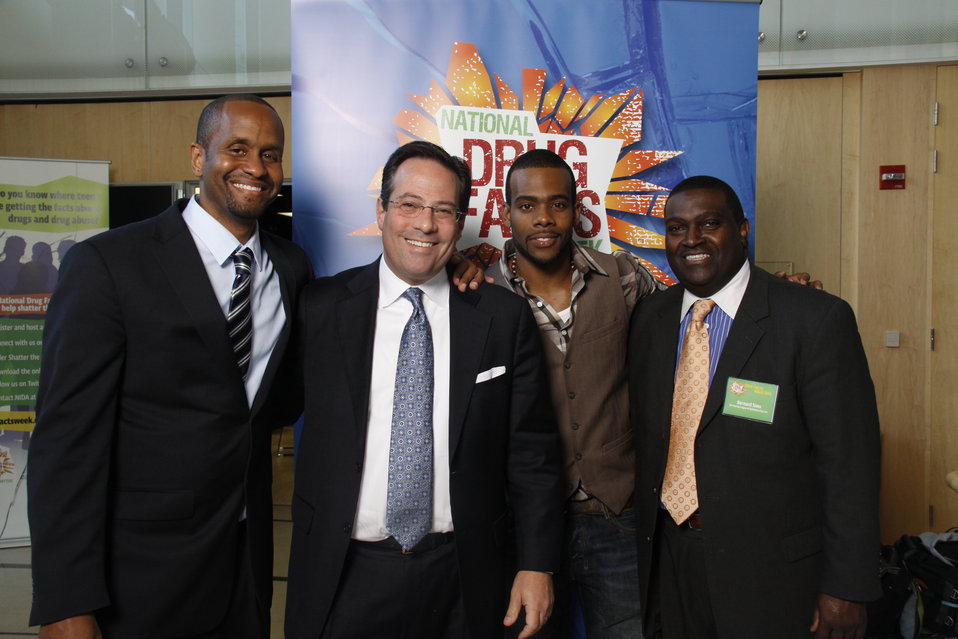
NDFW Mentor Event